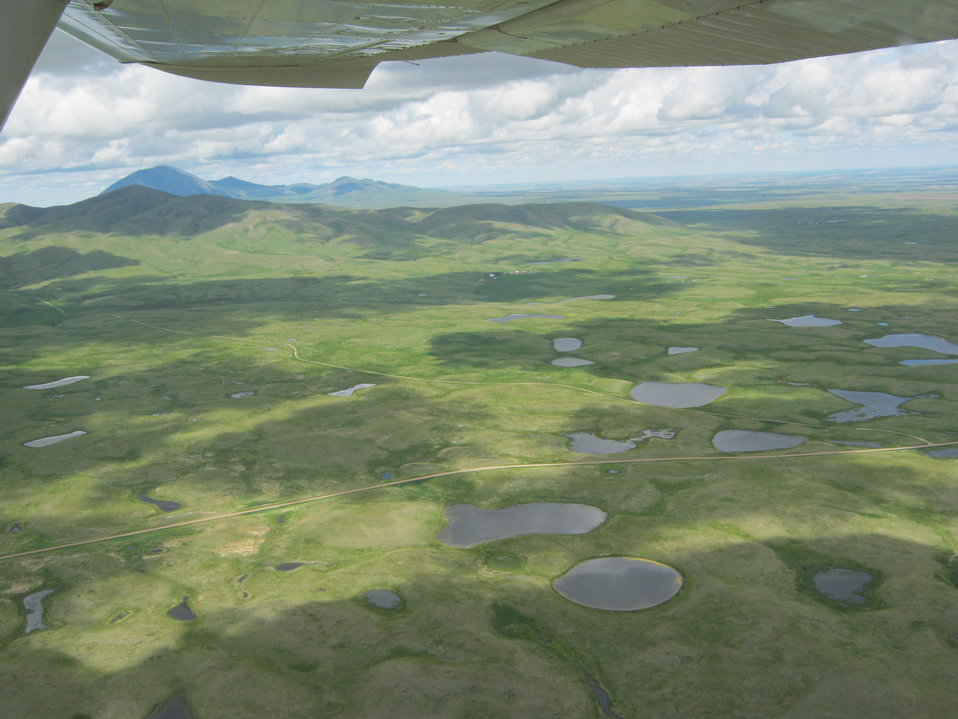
Get Your Goose On!

The goose takes flight at Benton Lake National Wildlife Refuge